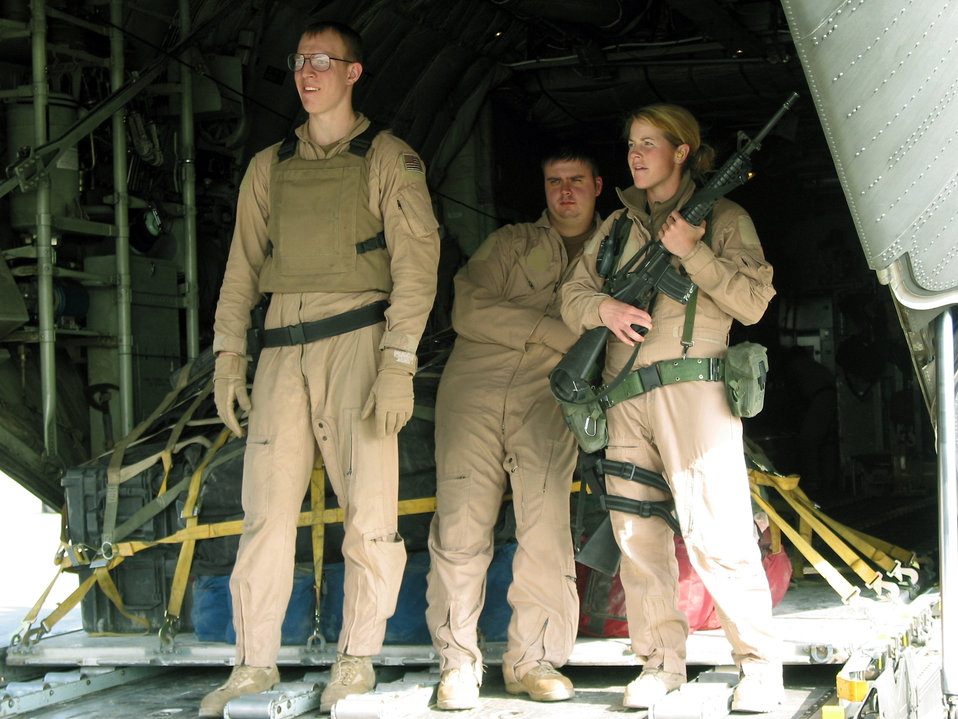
Fly Away

MANAS AIR BASE, Kyrgyzstan -- Staff Sgt. Tonya Morrill keeps her M-16 ready as C-130 Hercules loadmasters Airman 1st Class Dan Maslowski (left) and Senior Airman Lee Lucas wait to offload cargo. A local training course in aircraft and aircrew protection trained Morrill and other security forces airmen before they traveled to unprotected airfields.